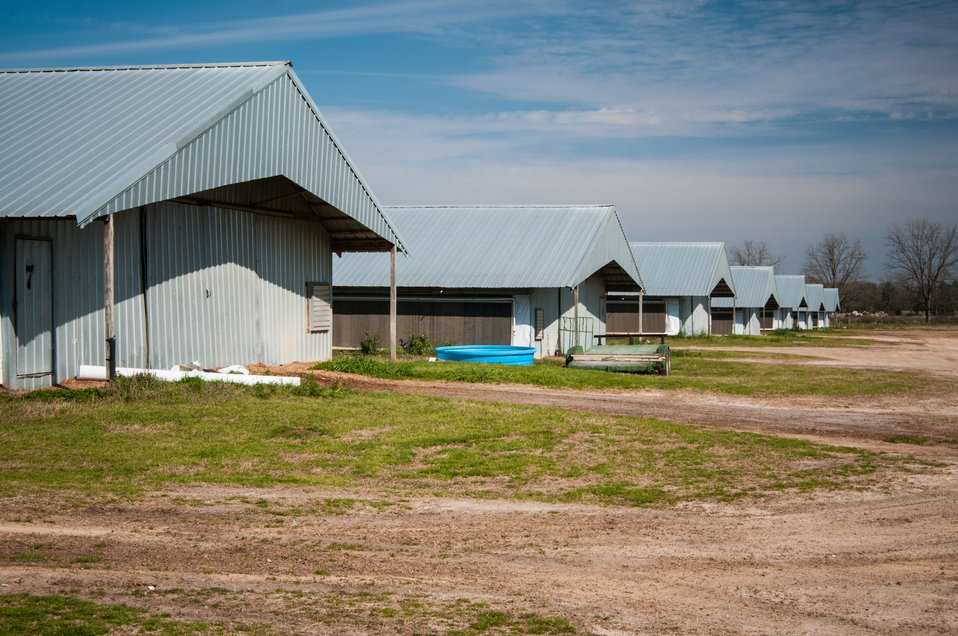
AKC Poultry houses bask in the sun in Arlington, GA on Mar. 7, 2013. AKC has eight chicken houses with approximately 20,000 birds per house. That is 160,000 birds, which translates into tons of litter. AKC was able to address their nutrient management and water quality concerns with a Stackhouse to better manage poultry litter through a U.S. Department of Agriculture (USDA) Natural Resources Conservation Service (NRCS) Environmental Quality Incentives Program (EQIP) contact. Stackhouses get the poultry litter off the ground so it will not contaminate water. The USDA Strike Force Initiative has designated Baker County, GA as a Strike Force county selected to receive assistance to relieve persistent poverty in historically high-poverty counties.